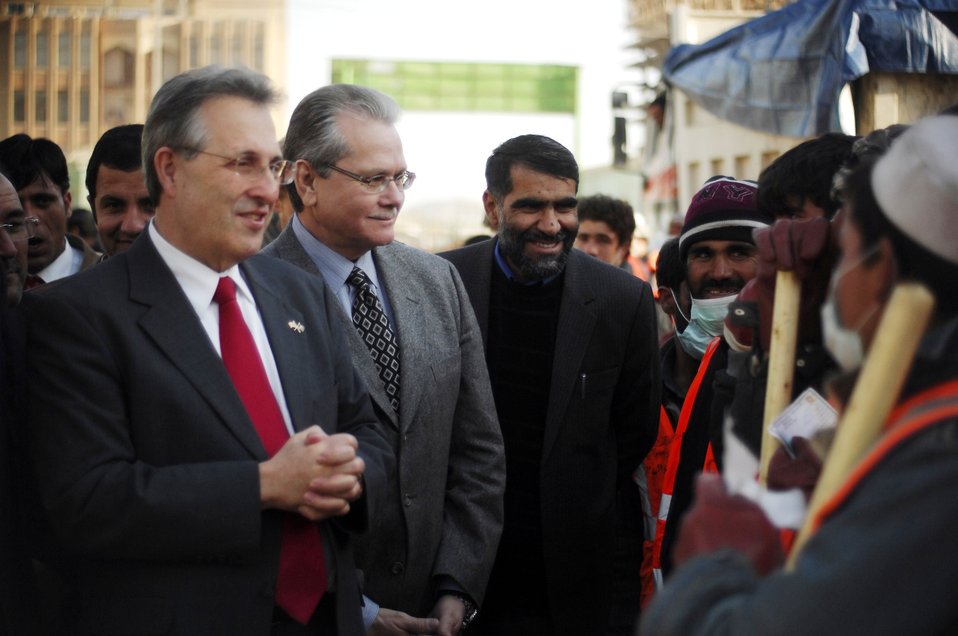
Care20